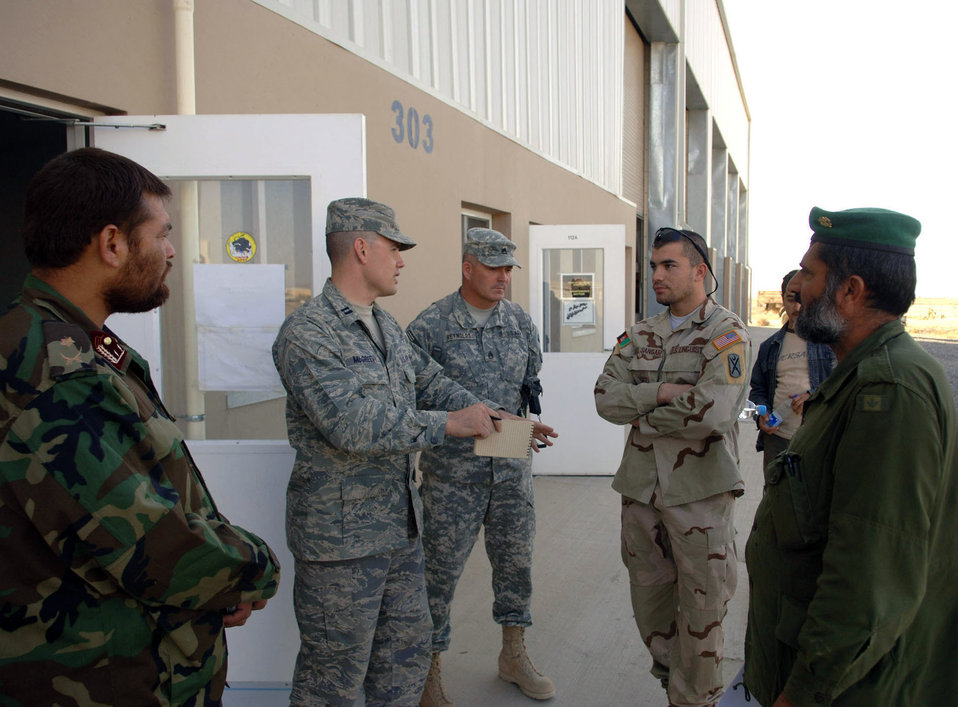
American servicemembers mentor Afghan maintainers

Capt. Eric McGreevy and Army Staff Sgt. Mark Reynolds speak to Afghan soldiers through an interpreter Nov. 20 Forward Operating Base Hero, Afghanistan. The training provided by the mentors is critical to keep the Afghan national army's fleet of more than 1,300 vehicles operational. Captain McGreevy and Sergeant Reynolds are Afghan National Army maintenance mentors.